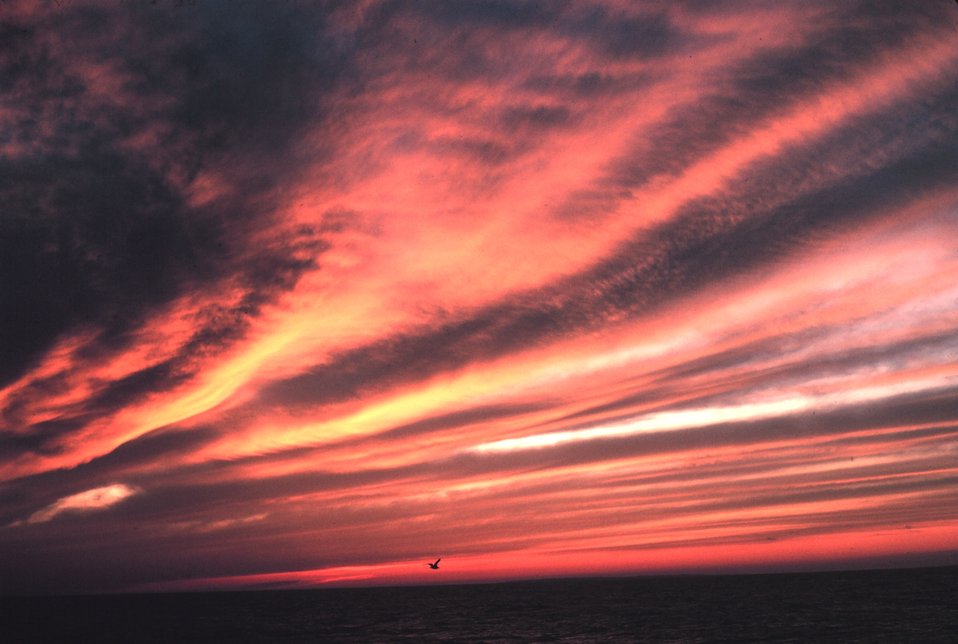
Sunset off the Massachusetts coast